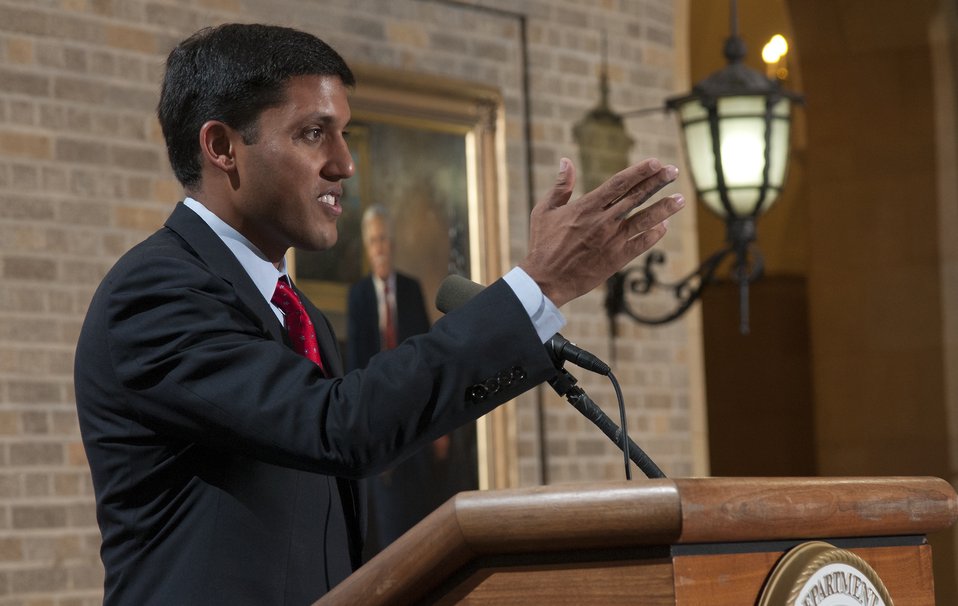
Administrator Shah

U.S. Agency for International Development (USAID) Administrator Dr. Rajiv Shah speaks about the “Feed the Future” initiative at the Iftar celebration held at the U.S. Department of Agriculture (USDA) on August 7, 2012. USDA, USAID and Islamic Relief USA hosted the Iftar celebration that called attention to the importance of reducing food insecurity abroad with the theme “Feed the Future: Together We Can.”